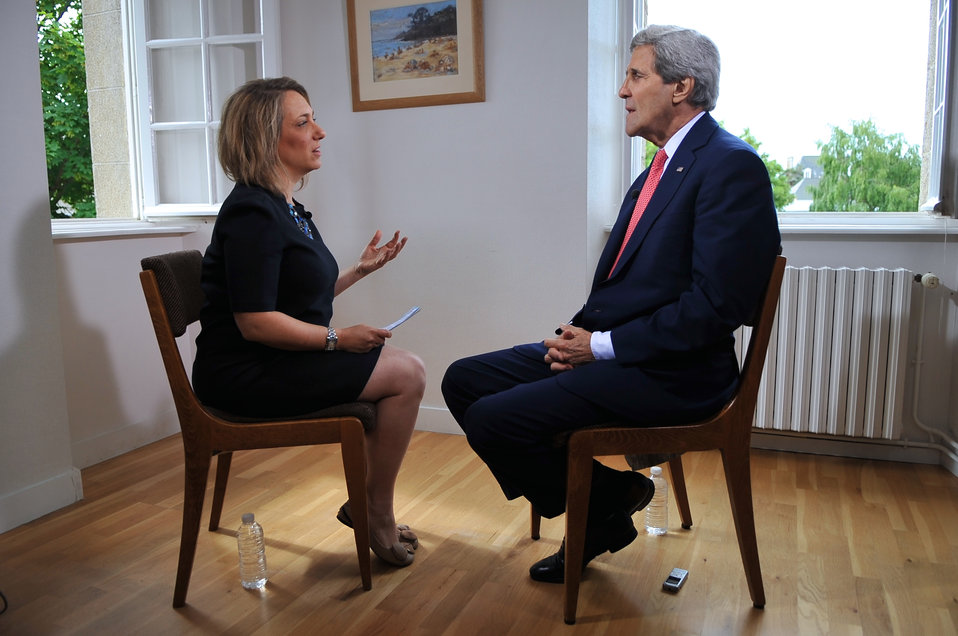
CNN Reporter Labott Interviews Secretary Kerry in Brittany Town

CNN Reporter Elise Labott interviews U.S. Secretary of State John Kerry in Saint Briac, France, on June 7, 2014. during a sit-down portion of an interview about the 70th anniversary of D-Day and the effort by local residents to save the remnants of his family home after the Nazis destroyed it as American liberators approached.